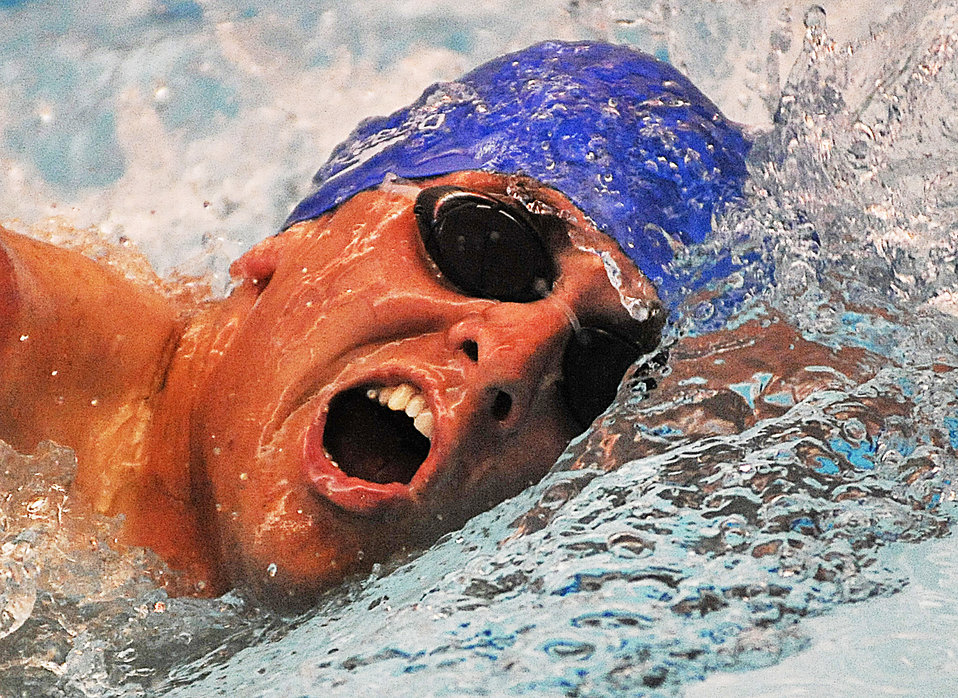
Warrior Games

U.S. Air Force 1st Lt. Ryan McGuire heads toward the finish line as he takes part in a swimming competition during Warrior Games 2012 at the U.S. Air Force Academy in Colorado Springs, Colo., May 5, 2012. McGuire is with the Air Force team.